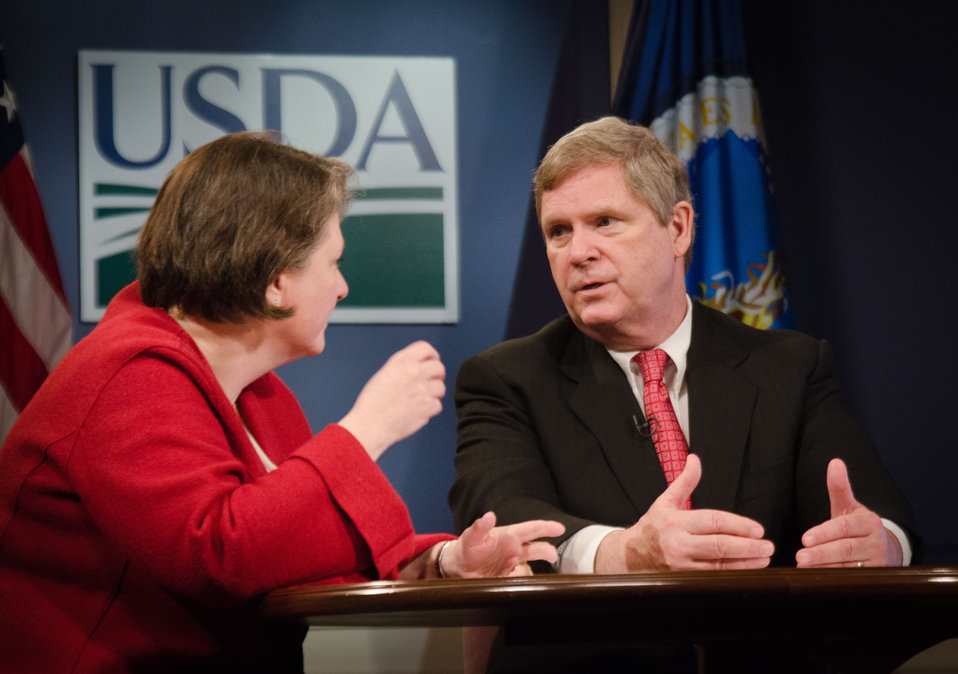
Agriculture Secretary Tom Vilsack and Agriculture Deputy Secretary Kathleen Merrigan unveiled the Know Your Farmer, Know Your Food (KYF) Compass, an interactive web-based document and map highlighting USDA support for local and regional food projects and successful producer, business and community case studies. While hosting a live webinar to highlight USDA's work over the past three years, the Secretaries emphasized how local and regional food systems across the country create additional economic opportunities for farmers, ranchers and food entrepreneurs, expand healthy food access and meet growing customer demand. At the U.S. Department of Agriculture in Washington, D.C. on Wednesday, February 29, 2012.